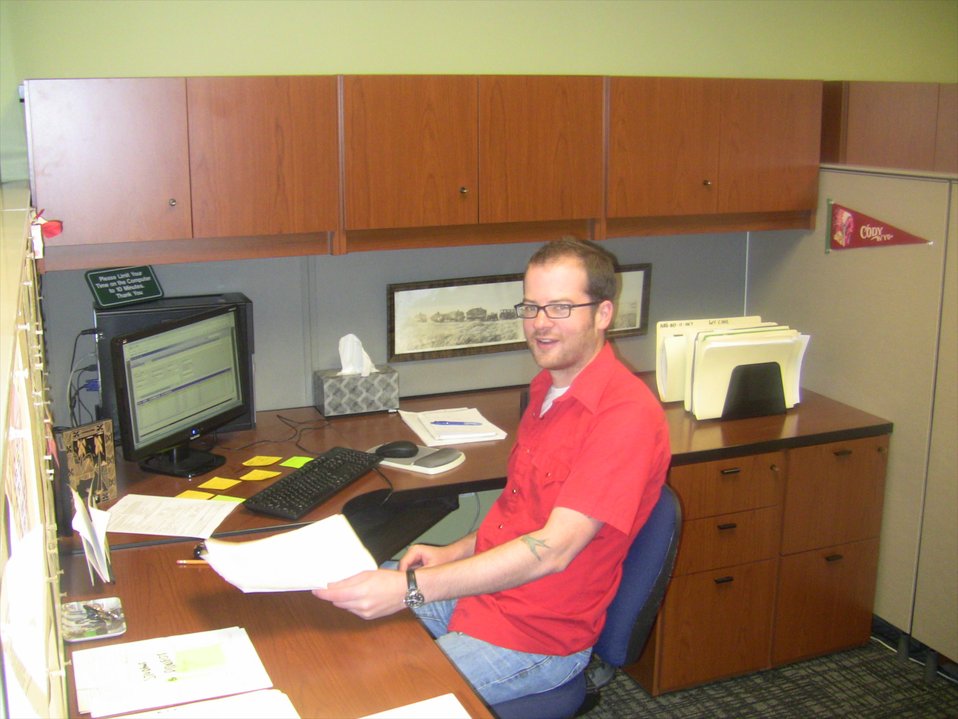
Cody White working on HMS entries; Location: National Archives at Denver, Broomfield, CO